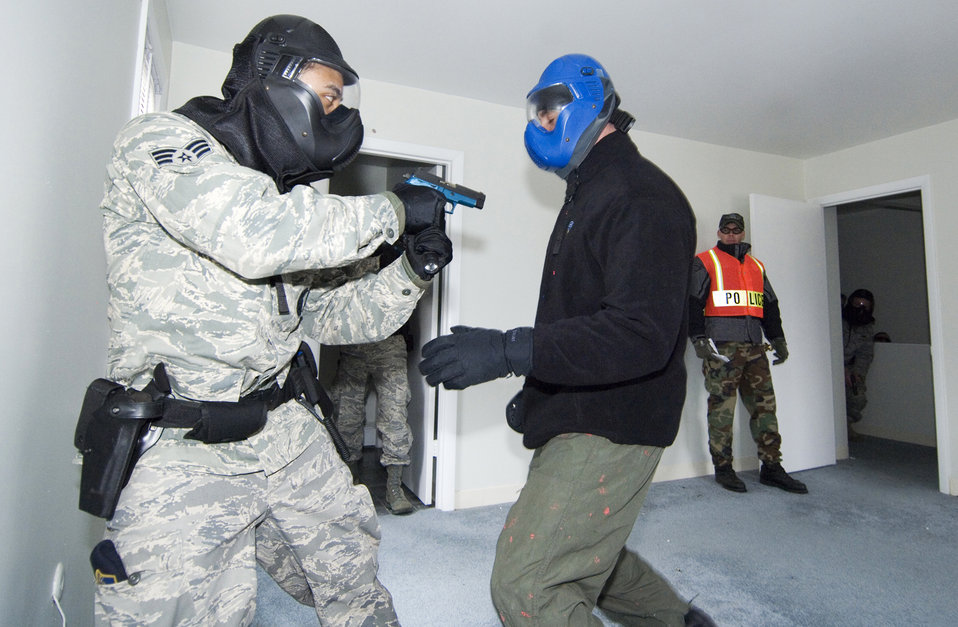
Joint training exercise strengthens AF, civilian partnerships

Senior Airman Jonathan Melendez fires a Simunition round at Massachusetts State Police Trooper Dan O'Brian who was playing the role of a dangerous armed suspect who refused to respond to Airman Melendez's orders March 16 at Hanscom Air Force Base, Mass. The scenario was part of the first joint police training between Hanscom AFB security forces and local law enforcement agencies. Airman Melendez is assigned to the 66th Security Forces Squadron.